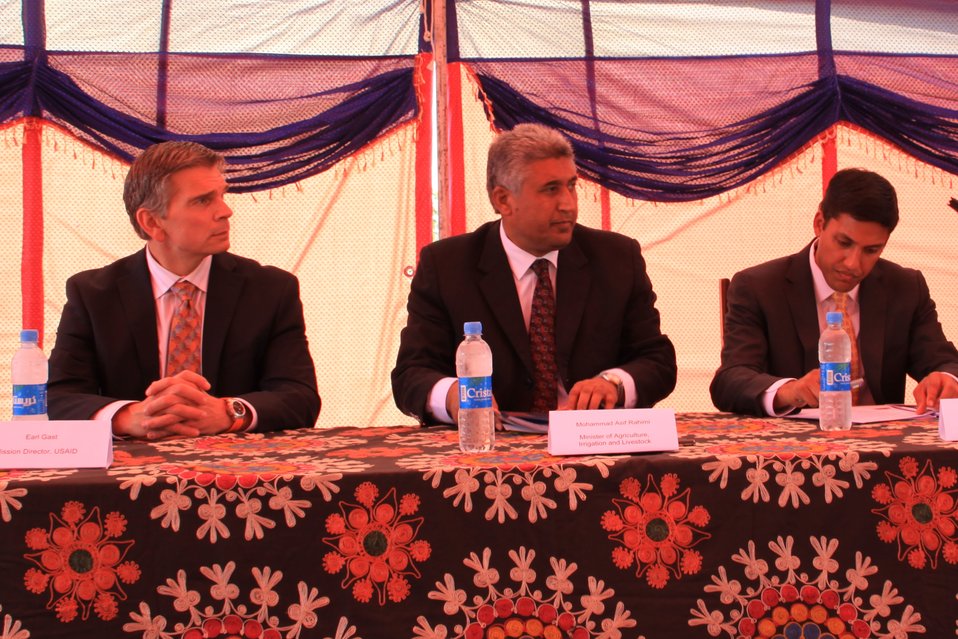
Badam Bagh Farm